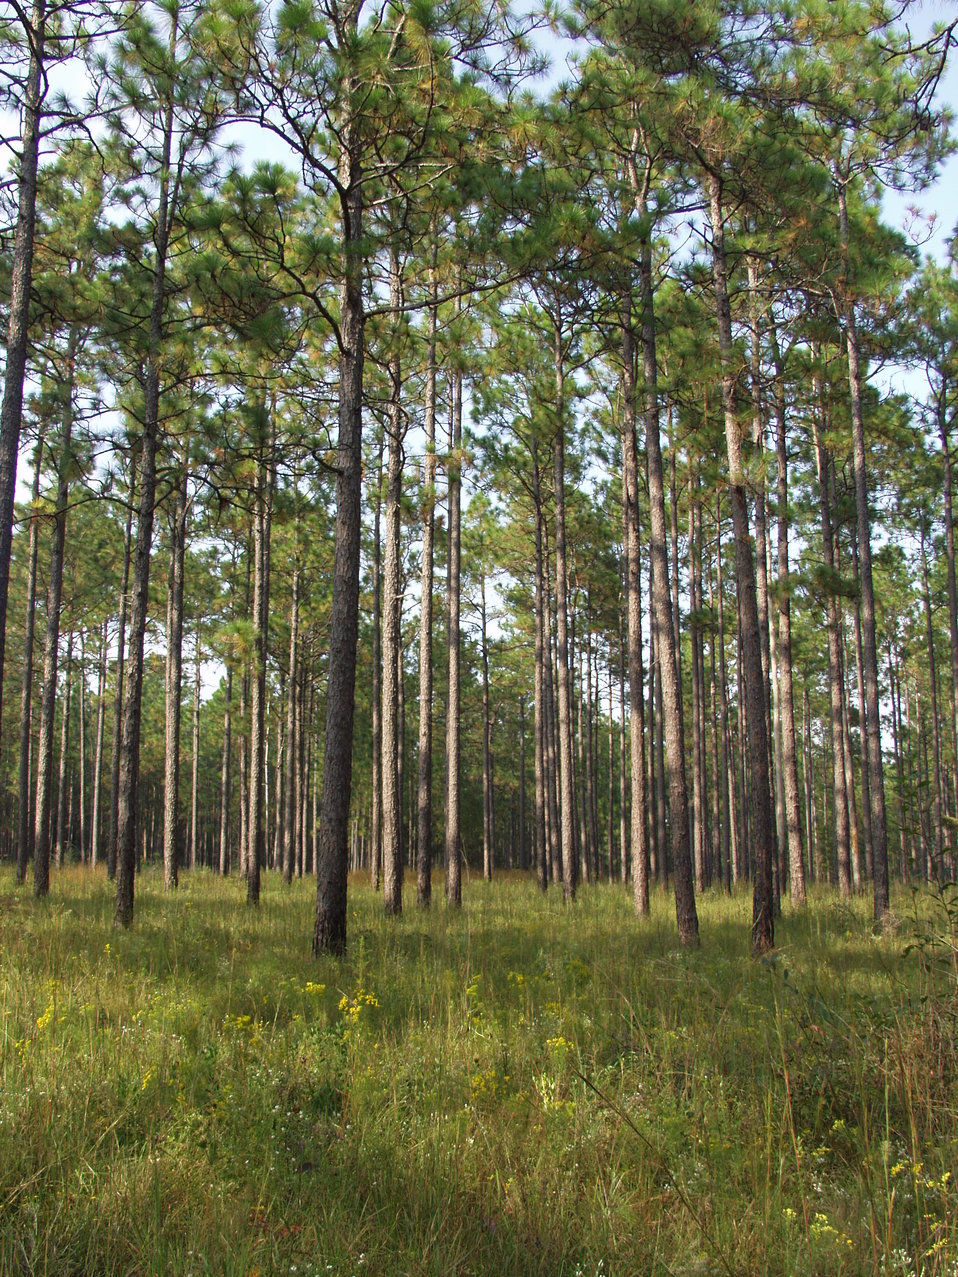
Longleaf pine standing tall

The distance between individual longleaf pines in the forest allows the sun to nourish a biologically rich understory. Research indicates longleaf pine trees are the southern pine best suited for a changing climate with more intense storms, longer droughts, and increased risk of beetle infestation.